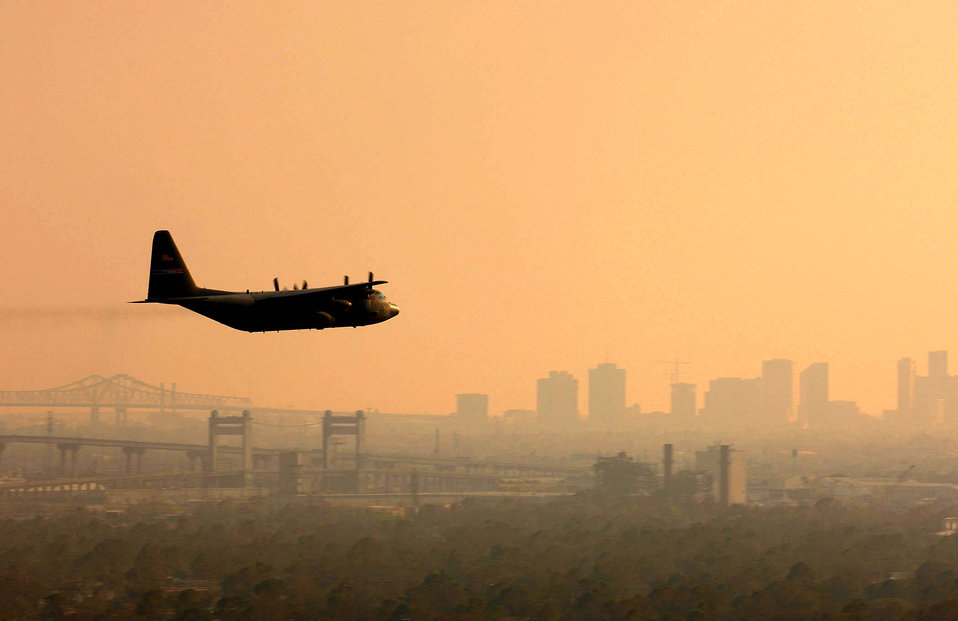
Spray 'em out

NEW ORLEANS -- A U.S. Air Force Reserve C-130 Hercules from the 910th Airlift Wing at Youngstown Air Reserve Station, Ohio, sprays Dibrom, a pesticide approved by the U.S. Environmental Protection Agency, over the city Sept. 13. The C-130 crew plans to spray the New Orleans area first, then other affected Gulf Coast areas as required. Crews will target are primarily mosquitoes and filth flies, which are capable of transmitting diseases such as Malaria, West Nile virus, and various types of Encephalitis. The C-130 is capable of spraying about 60,000 acres per day.